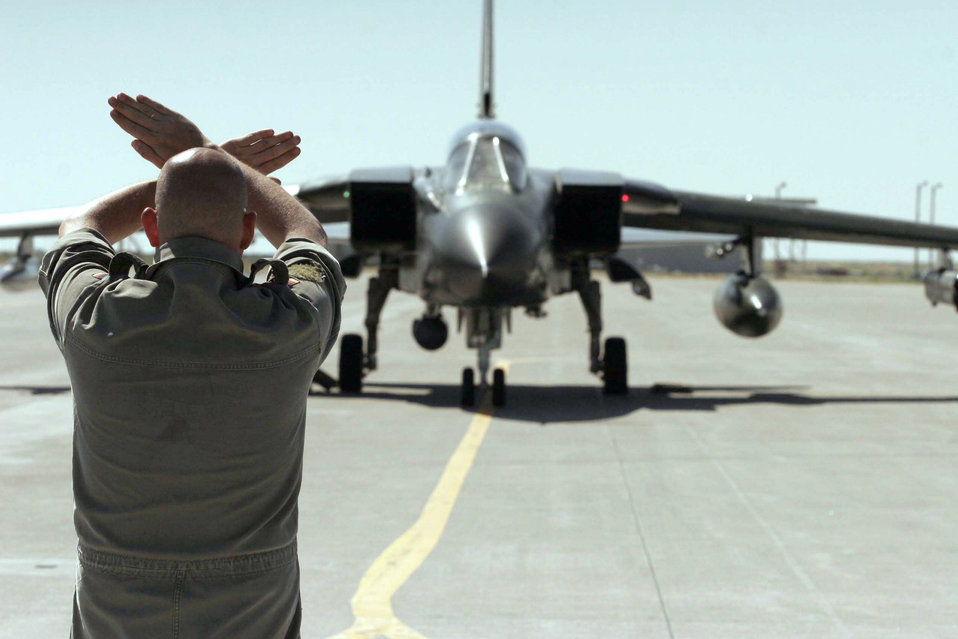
Allied aircrews train for action

Tech. Sgt. Kalle Leichenwascher launches his jet for a training mission at Mountain Home Air Force Base, Idaho, on Wednesday, June 21. German air force aircrews and maintenance teams are working alongside their American counterparts during a joint training exercise. Sergeant Leichenwascher is a crew chief with the German air force.